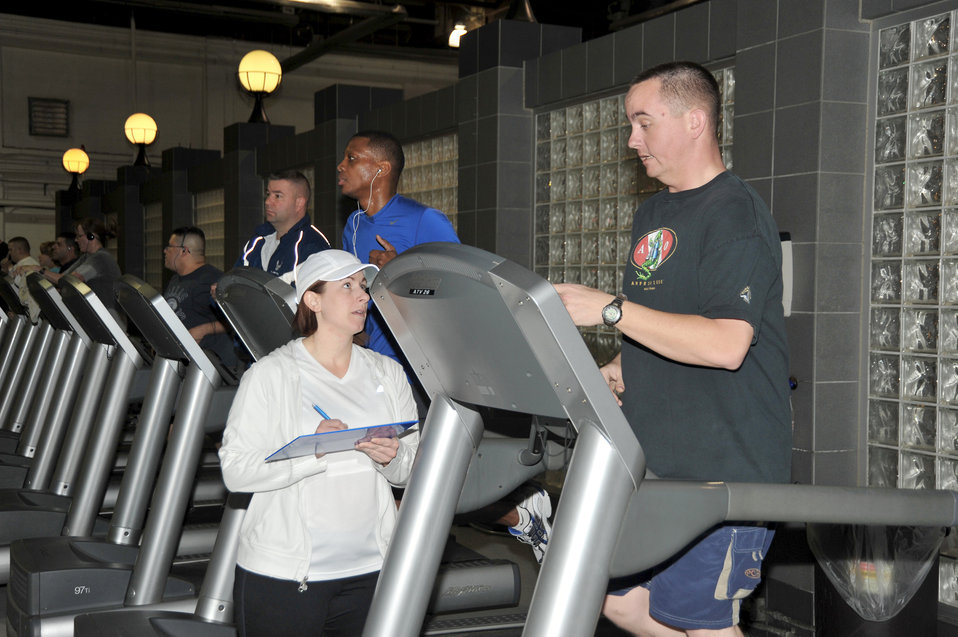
Get Fit Run

Marcy Jameson talks with Senior Airman Justin Speck during the Get Fit Run class at Offutt Air Force Base, Neb. Ms. Jameson is an exercise physiologist and the health and wellness center flight chief at Offutt AFB. Airman Speck is a member of the 55th Logistics Readiness Squadron.